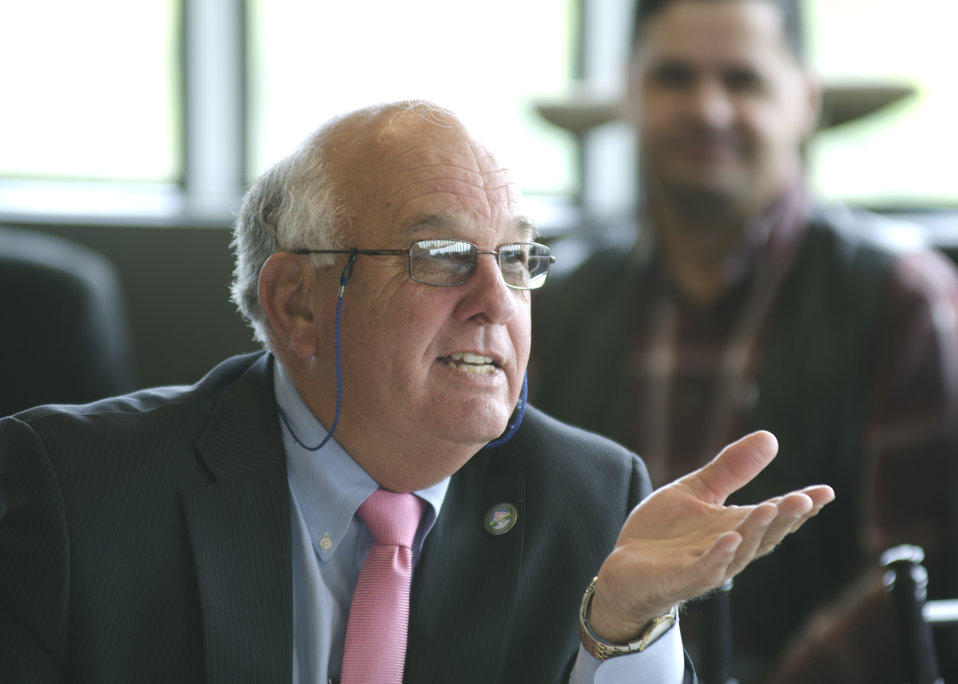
State Legislator and Farmer/Rancher of the Muscogee Nation in Warner, OK., Jerry McPeak speaks at the first business meeting of the U.S. Department of Agriculture’s (USDA) Council for Native American Farming and Ranching (CNAFR) held at the National Museum of the American Indian in Washington, D.C., on Tuesday, Aug. 14, 2012. CNAFR was created to advise the Secretary on ways to eliminate barriers to participation for Native American Farmers and Ranchers in USDA programs. The Council was established as part of the Keepseagle settlement, and is conducted under the oversight of USDA's Office of Tribal Relations under the Office of the Secretary of Agriculture.